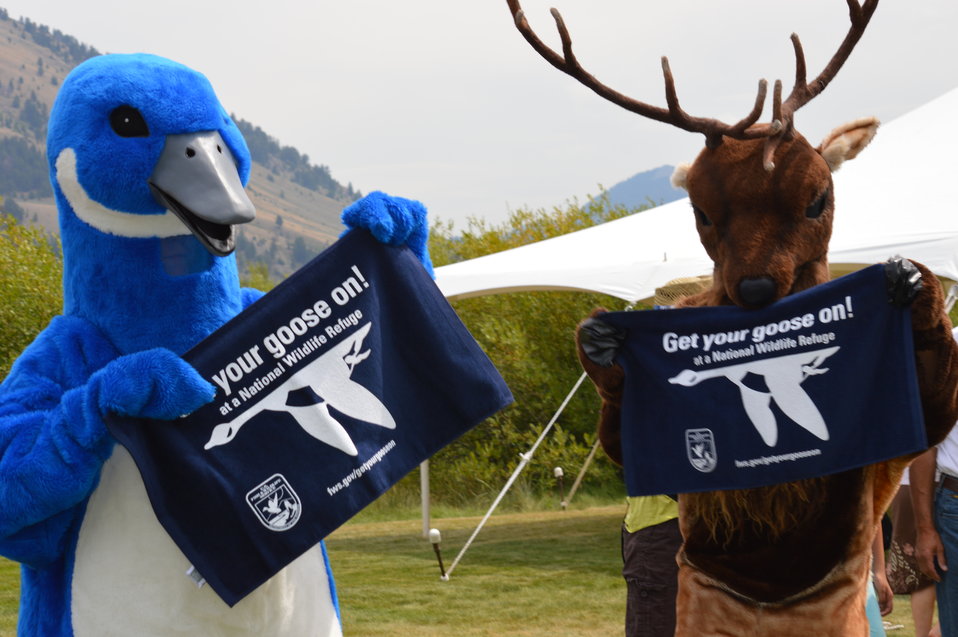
Get Your Goose On! - National Elk Refuge Style

On August 10, 2012 the U.S. Fish and Wildlife Service and Partners celebrated the 100 year anniversary of the establishment of the National Elk Refuge. In these photos, young attendees, along with Puddles the Blue Goose and the National Elk Refuge's mascot, showed us how to Get Your Goose On! with style.